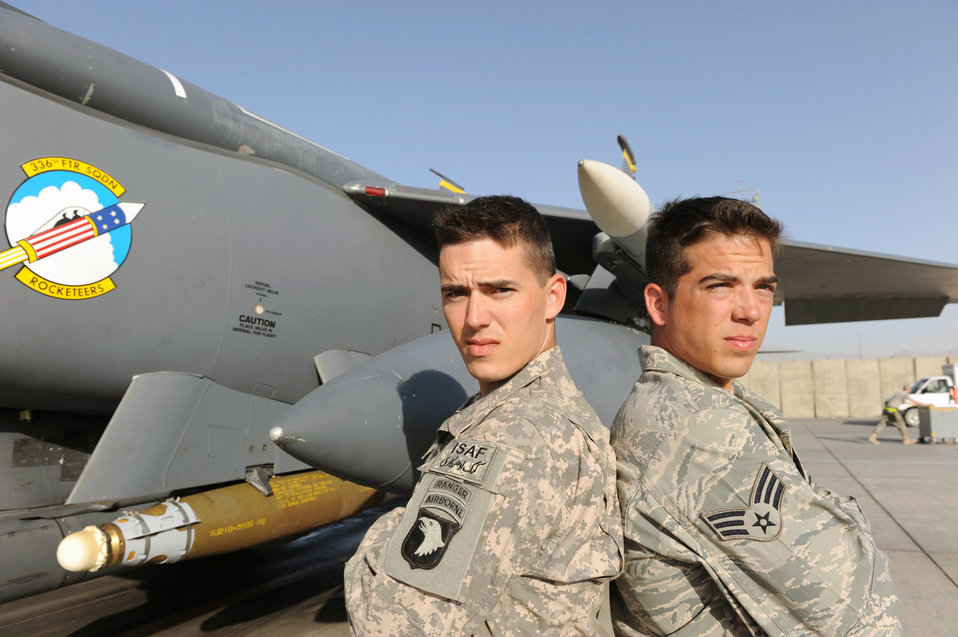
Brothers-in-arms

Army Staff Sgt. Jonathan Cole (left) and Senior Airman William Cole stand in front of an F-15E Strike Eagle at Bagram Airfield, Afghanistan. Sergeant Cole is a member of the 101st Airborne Division and Airman Cole is assigned to the 336th Aircraft Maintenance Unit at Bagram Airfield.